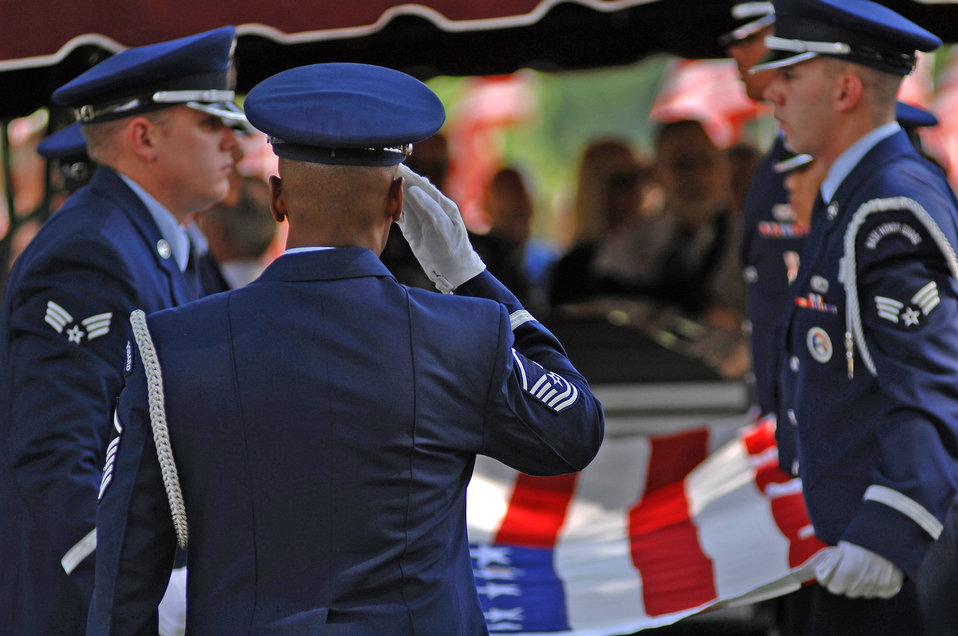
Airmen honor the fallen

Master Sgt. Gregory Giles renders a salute as the rest of the honor guard folds the American flag for presentation to the father of Chief Master Sgt. Quincy Adam July 27, 2009, at Chapel Hill Memorial Cemetery in Chapel Hill, N.C. Chief Adam's remains were discovered in Southeast Asia after being declared